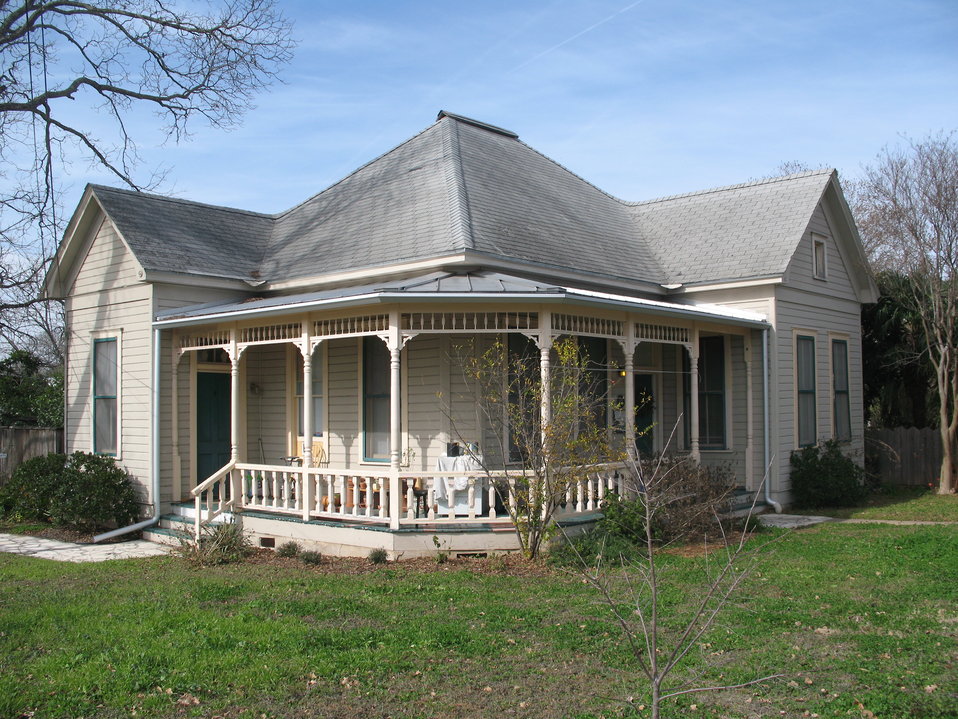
1170 San Bernard St., Austin TX